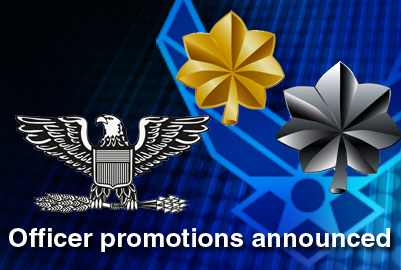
AF officials announce officer selections

Air Force officials selected 30 lieutenant colonels, 47 majors, and 3,087 captains for promotion during the 2009C chaplain, judge advocate and Line of the Air Force Central Selection boards.